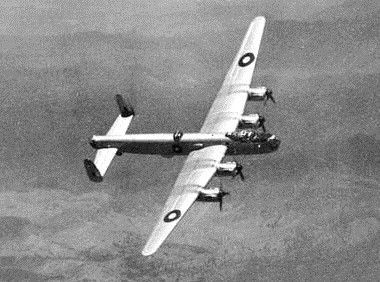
Melbourne, Vic. c. November 1946. An RAAF Avro Lincoln bomber aircraft built under licence at the Government Aircraft Factory at Fishermens Bend, shown during a demonstration flight.